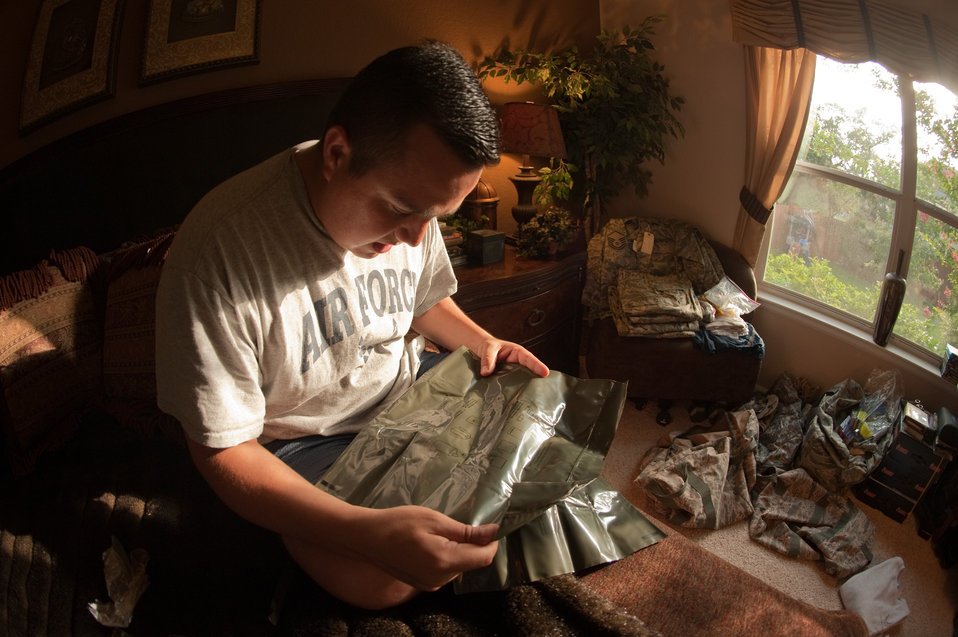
Blogging Couple Deployment preperation

Master Sgt. Rudy Gamez is in his home in San Antonio, Texas, on July 13, 2010 and reads over the instructions for applying permethrin insect repellent to a uniform set. He is preparing for Combat Skills Training and his sixth deployment to Southwest Asia. Later this year he and his wife Tech. Sgt Christina Gamez will both be deployed and blogging about their experiences.